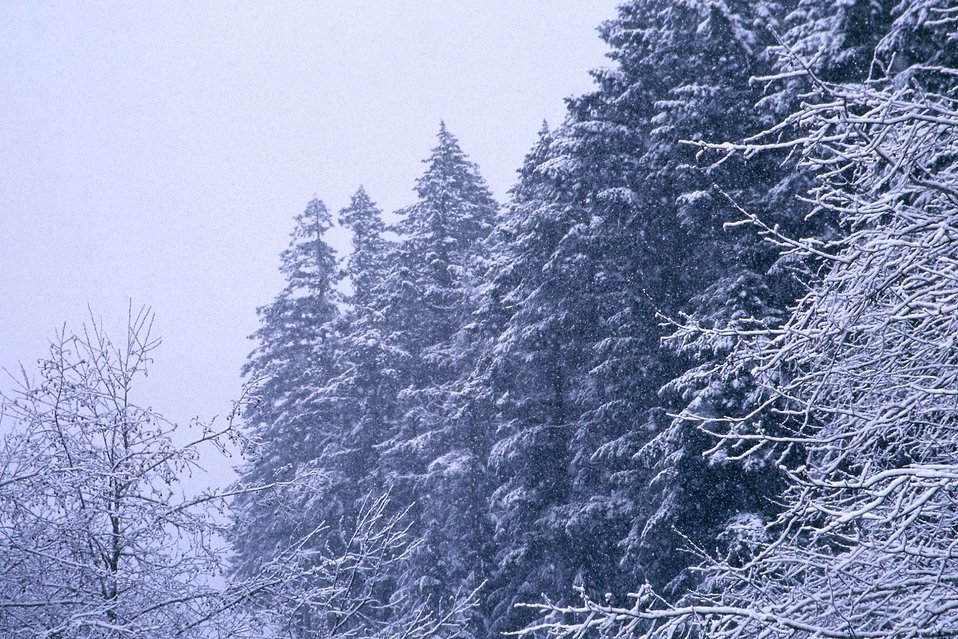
Mid Winter forest scene in the Mollala Corridor.